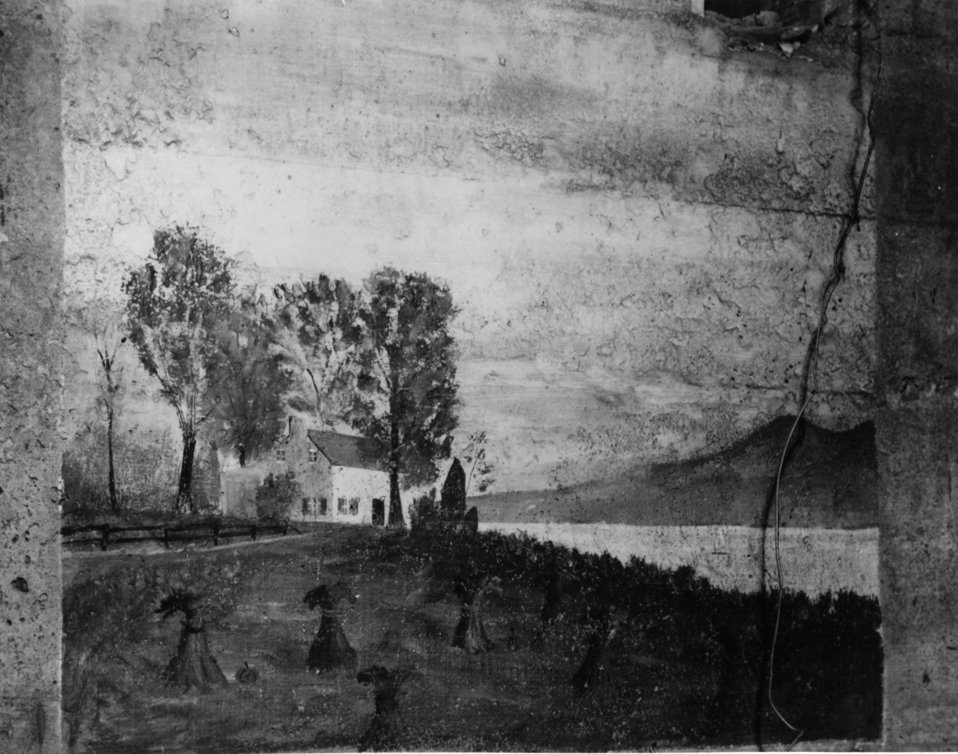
Early settlers at Oak Ridge